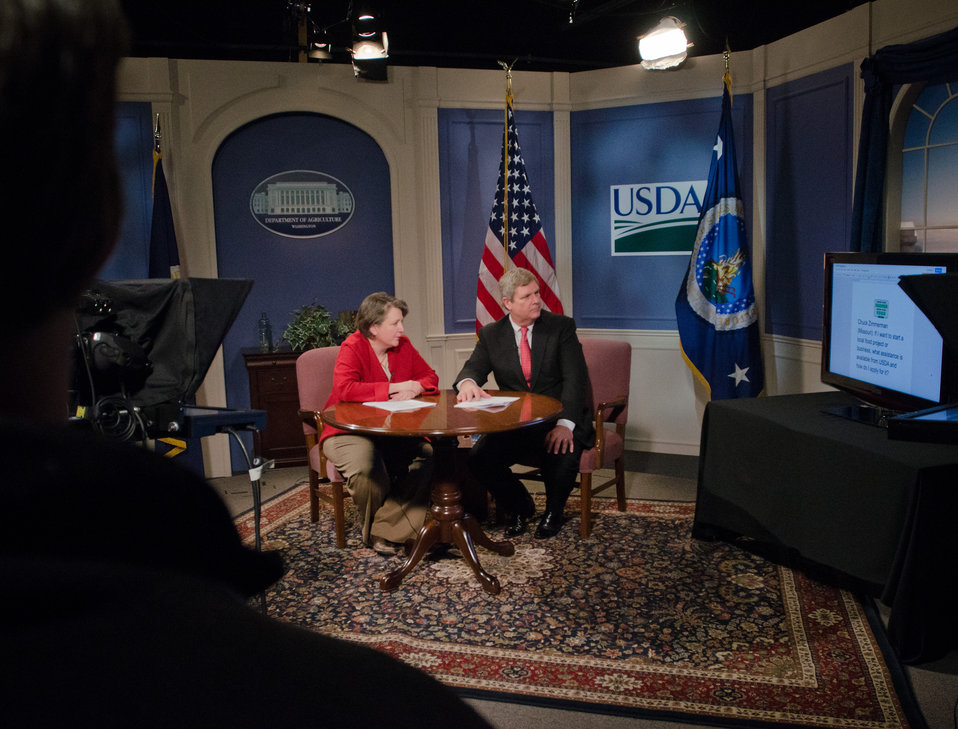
Agriculture Secretary Tom Vilsack and Agriculture Deputy Secretary Kathleen Merrigan received a question via twitter message while in the USDA TV studio, during the unveiling of the Know Your Farmer, Know Your Food (KYF) Compass, an interactive web-based document and map highlighting USDA support for local and regional food projects and successful producer, business and community case studies. While hosting a live webinar to highlight USDA's work over the past three years, the Secretaries emphasized how local and regional food systems across the country create additional economic opportunities for farmers, ranchers and food entrepreneurs, expand healthy food access and meet growing customer demand. At the U.S. Department of Agriculture in Washington, D.C., on Wednesday, February 29, 2012.